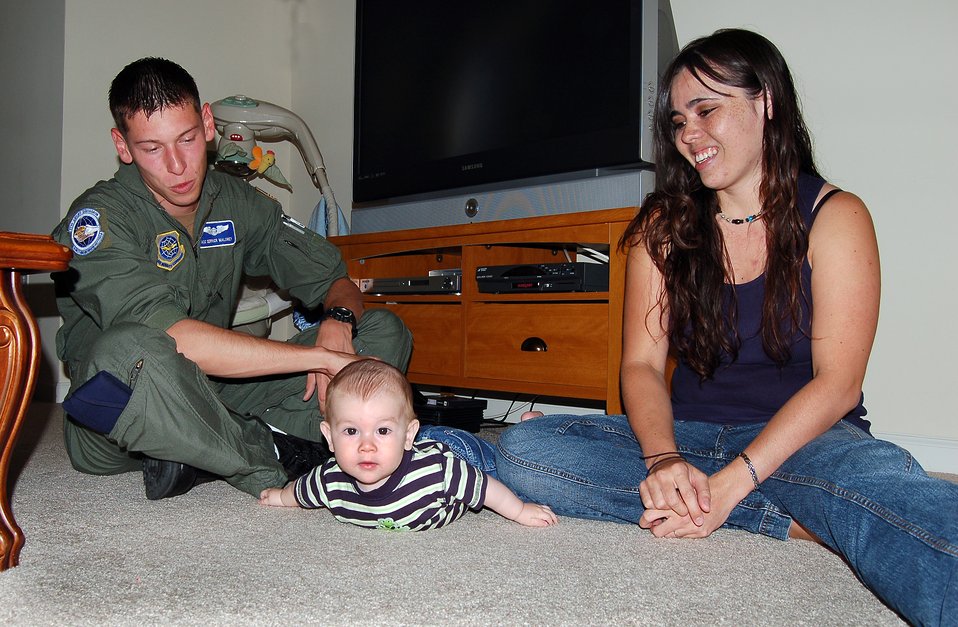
Loadmaster

Airman 1st Class Derrick Maloney and his wife Jeema play with their 6-month-old son, Tyler, at their home in North Charleston, S.C., prior to his C-17 Globemaster III training mission Oct. 26. Airman Maloney is a loadmaster with the 17th Airlift Squadron.